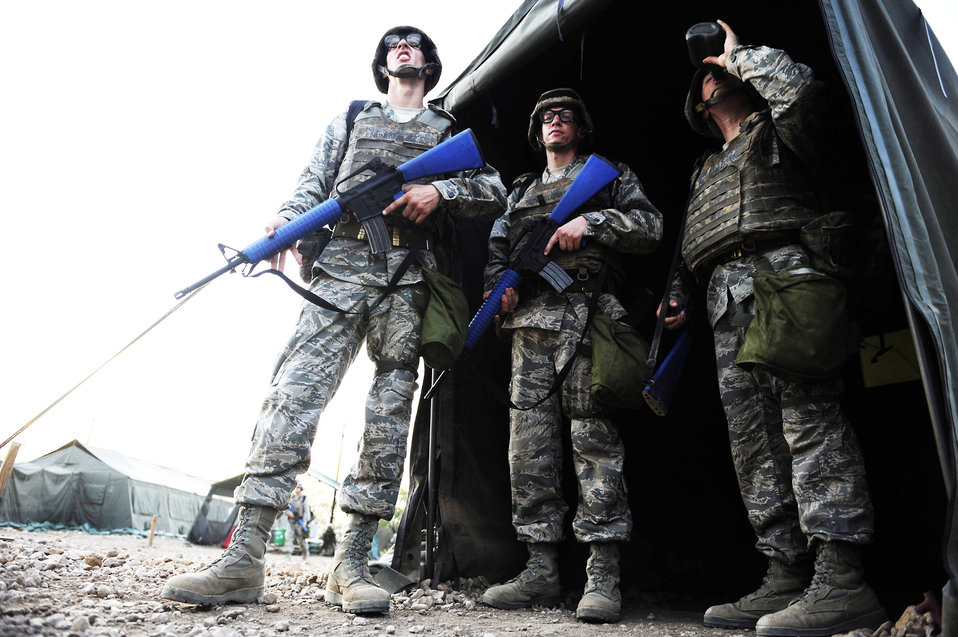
Trainees conquer the BEAST

Basic trainees step out of a tent as threat levels elevate during a training exercise at the Basic Expeditionary Airman Training course, Sept. 2, 2009, at Lackland Air Force Base, Texas.